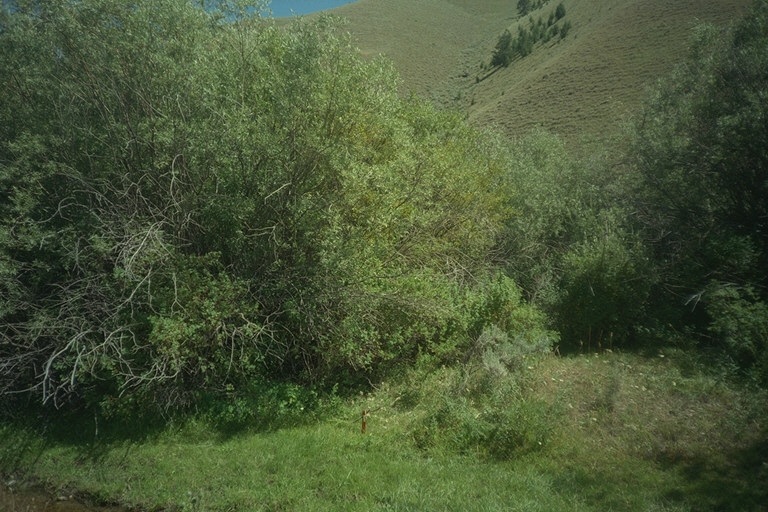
Riparian area Public Lands Salmon Field Office UCSC Upper Columbia Salmon Clearwater District